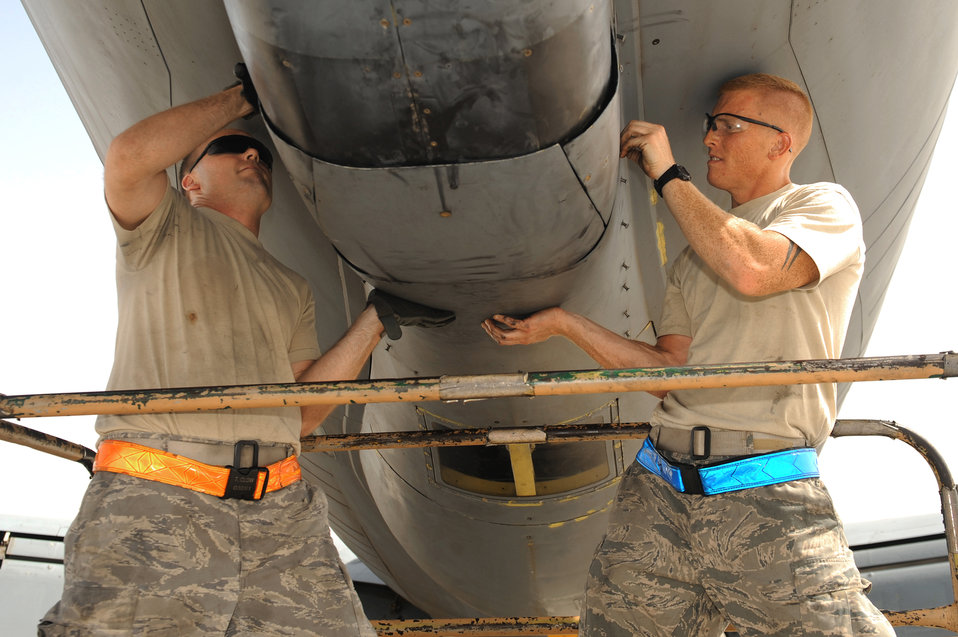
Buttoning the boom

Tech. Sgt. Todd Clow and Senior Airman Christopher Hughes attach a KC-135 Stratotanker boom pod fairing panel at an air base in Southwest Asia May 13, 2010. The Airmen are hydraulics technicians with the 379th Expeditionary Aircraft Maintenance Squadron.